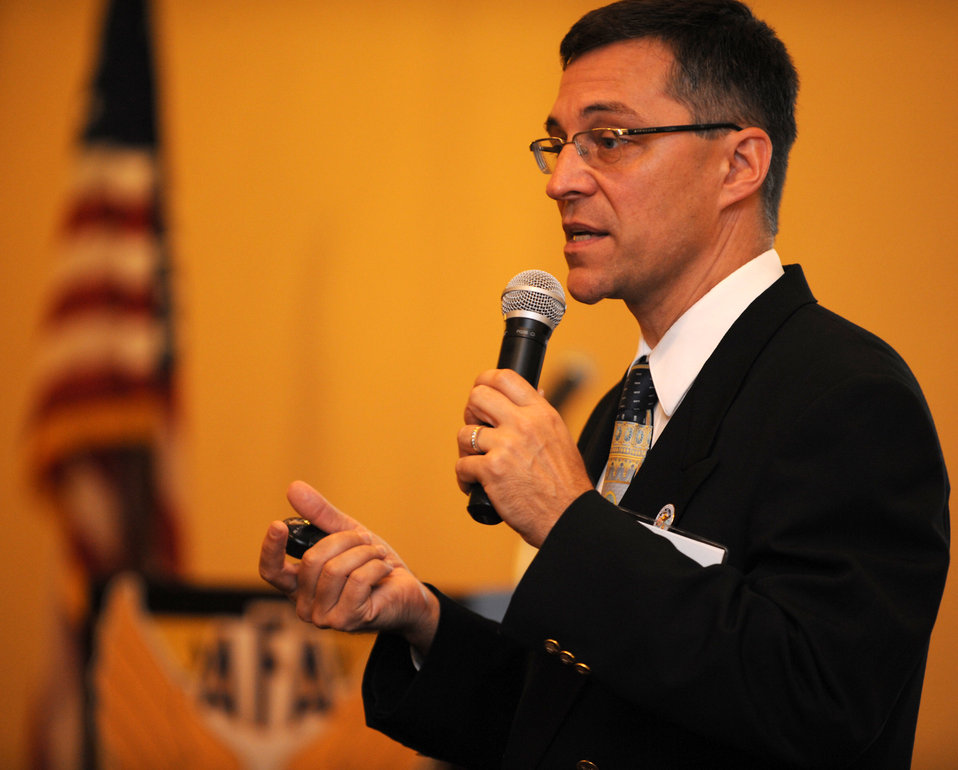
Top AF scientist speaks

Dr. Mark Maybury, Chief Scientist of the U.S. Air Force speaks about Air Force Cyber Vision 2025 at the Crystal City Marriott in Washinton D.C. on July 17, 2012. The Cyber Vision 2025 is the AF vision for the assured cyberspace advantage enabled by key science and technology advances where the AF will lead, follow, or watch in the near, mid and long term.